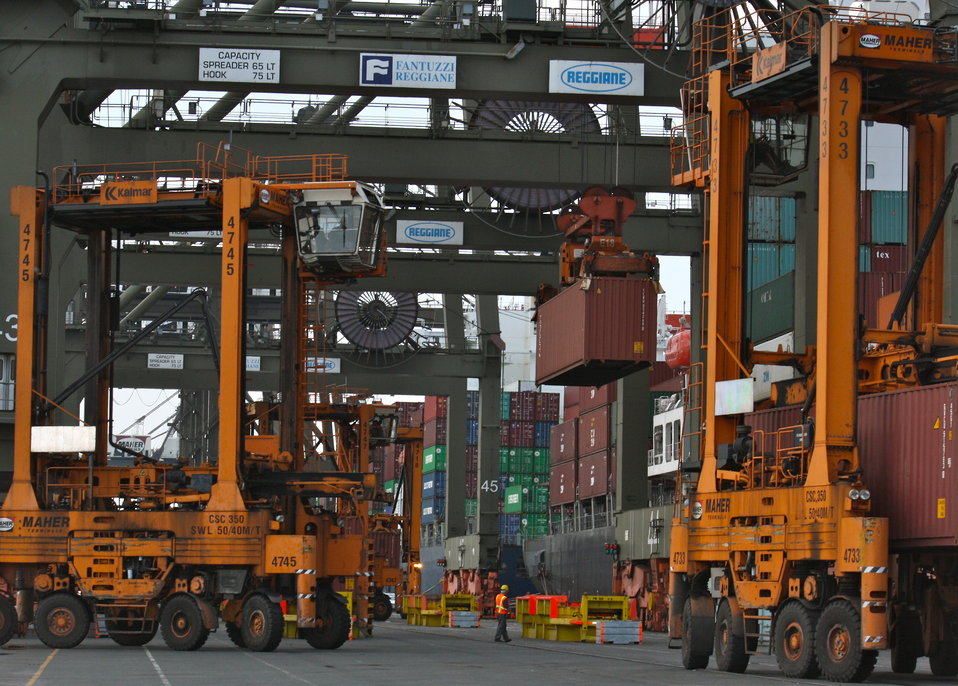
Seaport cargo facility in Elizabeth, N.J.

Inspectors from the Elizabeth, N.J. Office of Law Enforcement regularly inspect incoming and outgoing sea cargo for legal and illegal wildlife products.